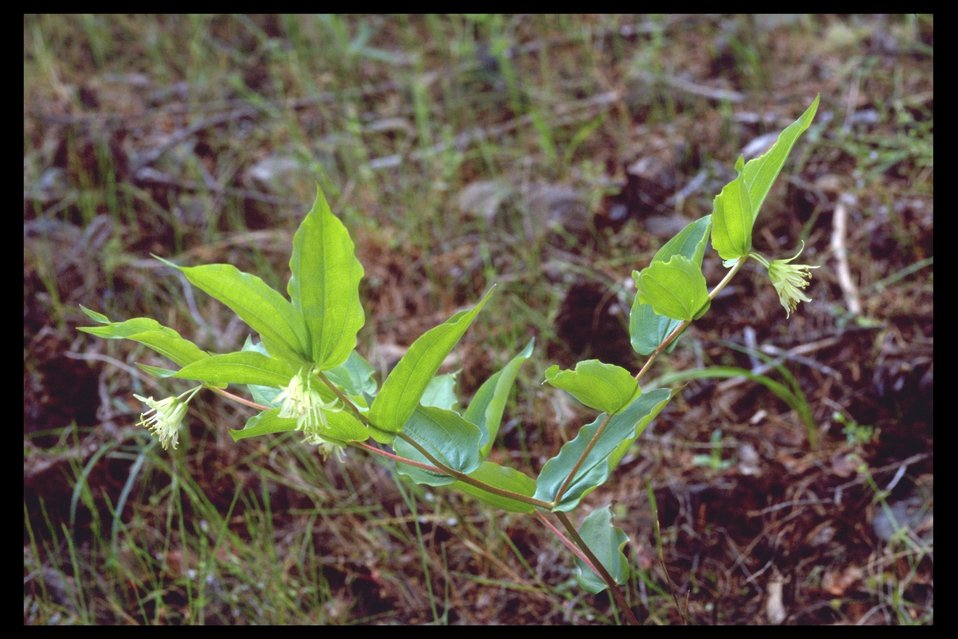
Hooker's Fairybell (Disporum hookeri) near Lost Creek Lake.